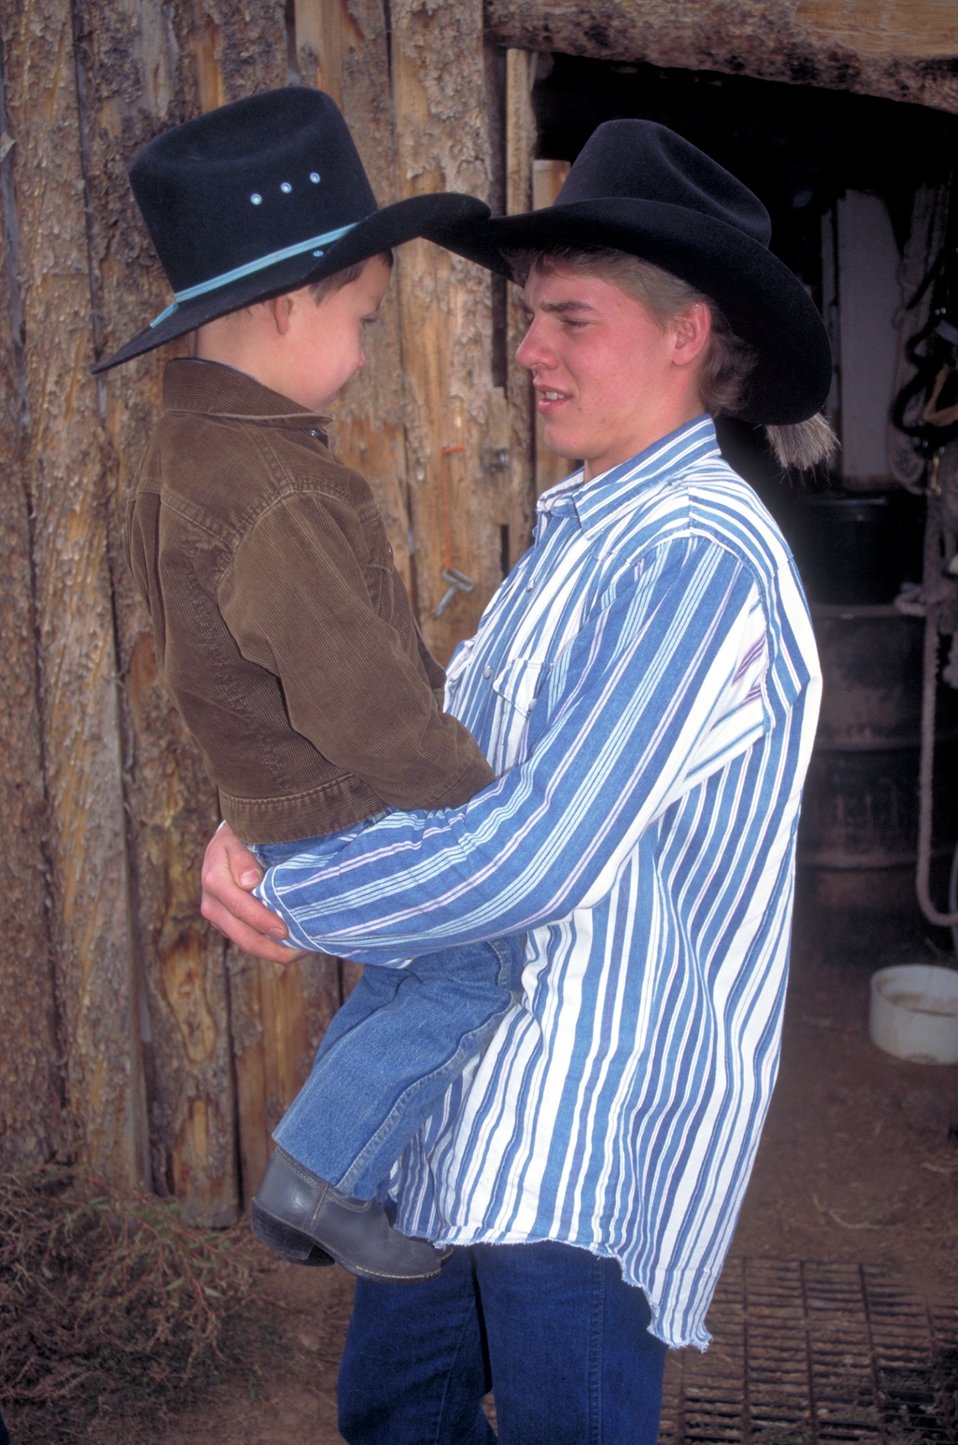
Working cowboys living near Vernal, Utah.